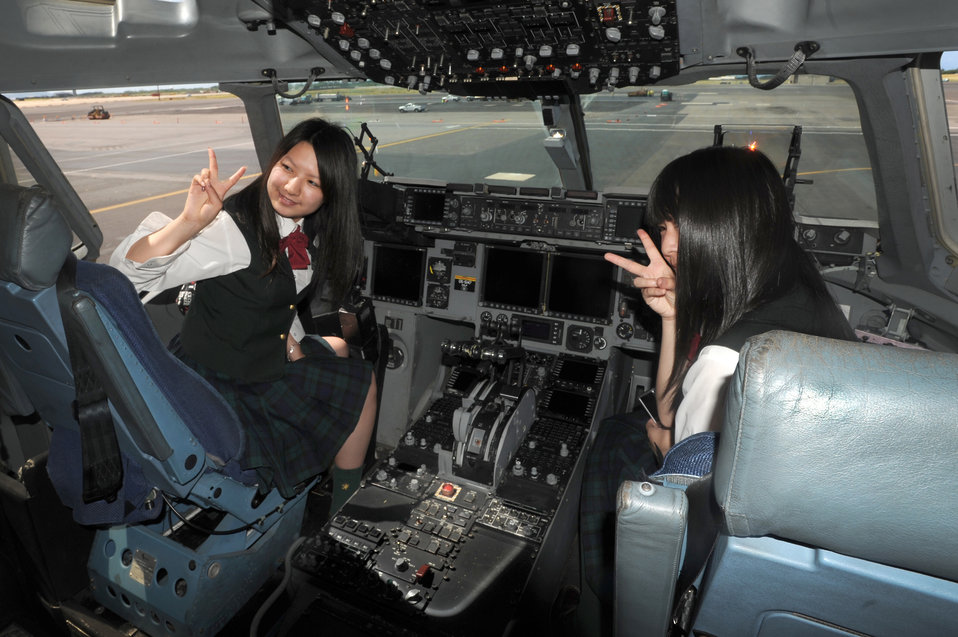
Japanese students visit Hickam

High school students from Sendai, Japan, sit on the flight deck of a C-17 Globemaster III during a base tour June 24, 2011, at Joint Base Pearl Harbor-Hickam, Hawaii. The students are from Sendai Ikuei Gakuen High School in Japan and are continuing their education in Hawaii while their homes and school are being rebuilt. The students came to Joint Base Pearl Harbor-Hickam to tour the base and meet the C-17 crew who flew to Sendai following the earthquake and tsunami.